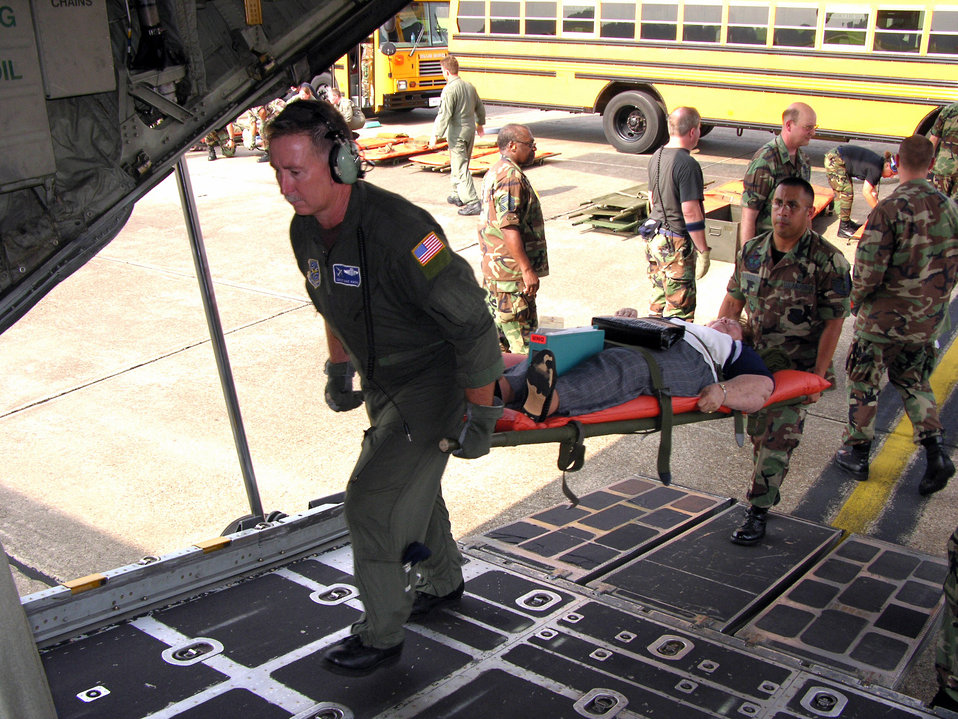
MAXWELL AIR FORCE BASE, Ala. -- Chief Master Sgt. Mike Harper (left) and Tech. Sgt. Daniel Barrera carry a patient onto an Air Force Reserve Command C-130 Hercules here Aug. 31. Sixty-two patients, all from the Air Force Village in Gulfport, Miss., arrived here by bus and stayed in the base gym. The patients were moved Aug. 31 and Sept. 1 to Andrews Air Force Base, Md. Chief Harper is a 908th Airlift Wing loadmaster, and Sergeant Barrera is assigned to the 42nd Aeromedical Dental Operations Squadron.